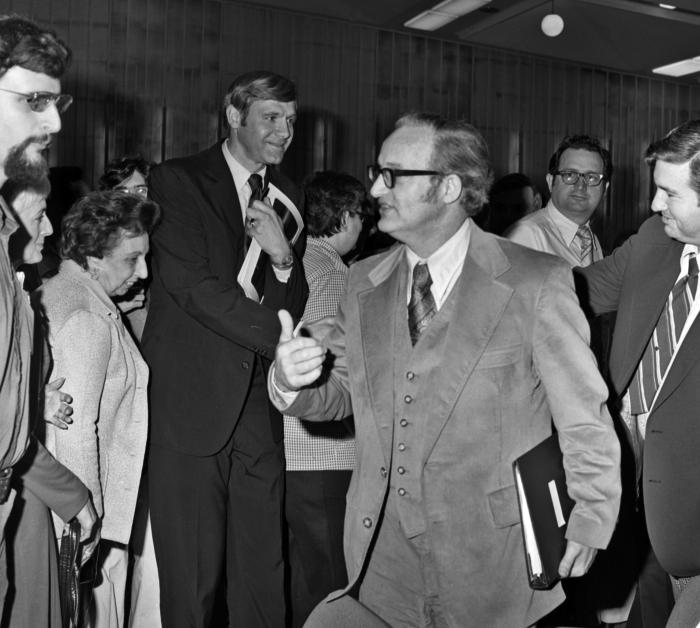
This April 5, 1977 photograph depicts former CDC Director William H. Foege, M.D., M.P.H., (left of center) while attending a reception after being named Director-Designate of the Centers for Disease Control and Prevention by DHEW Secretary Joseph A. Califano.